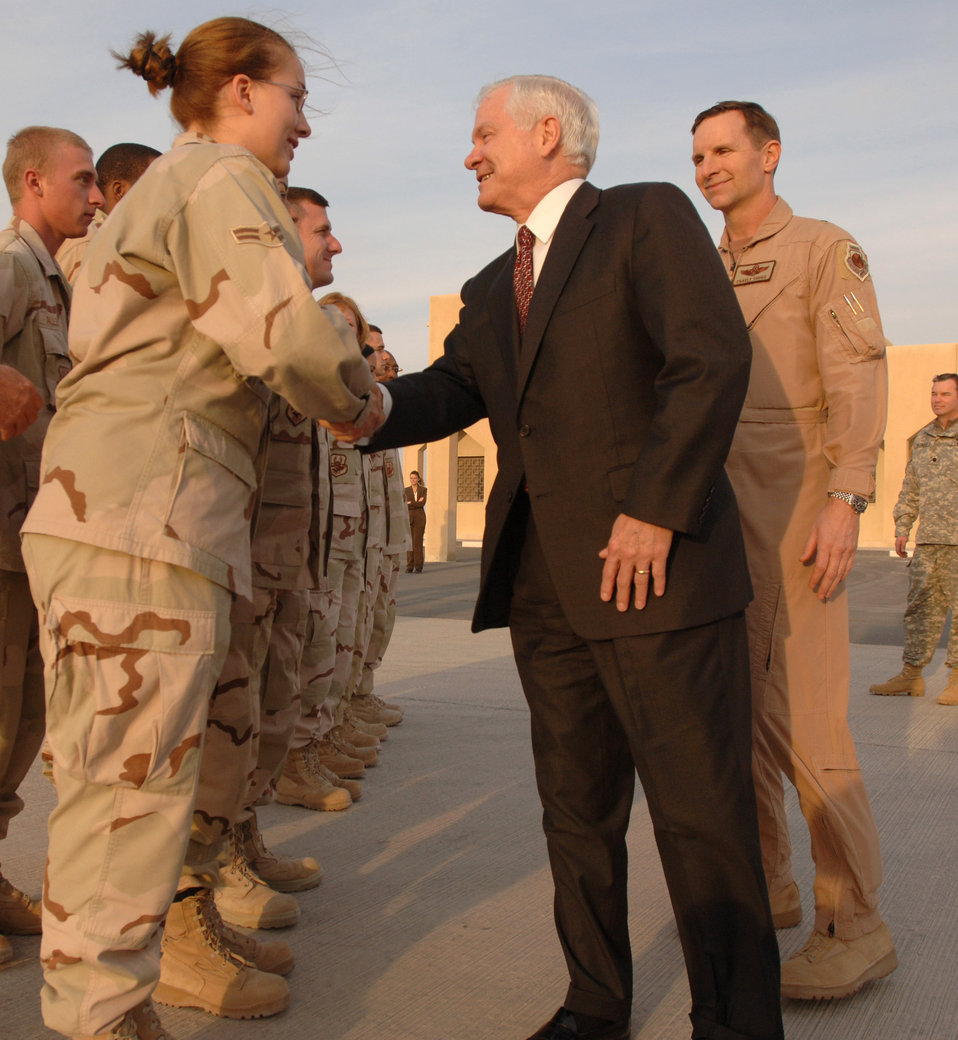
Secretary of defense visits Southwest Asia

Secretary of Defense Robert Gates shakes hands with Airman 1st Class Breann Hermann from the 379th Air Expeditionary Wing during his visit to the Combined Air Operations Center in Southwest Asia Jan. 18. Airman Hermann is a munitions specialist deployed from Royal Air Force Lakenheath, England.